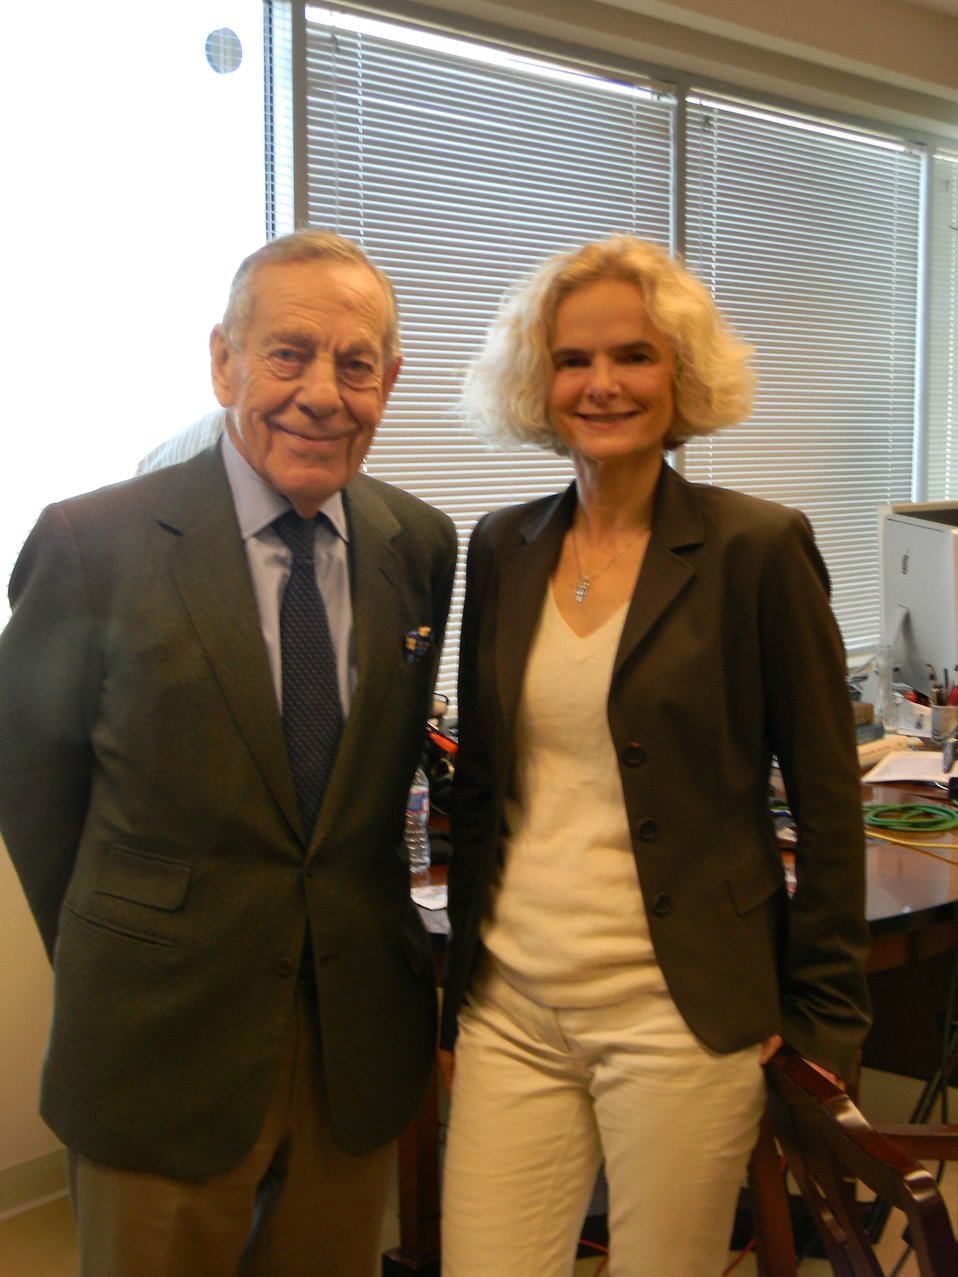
Dr. Nora Volkow Profiled on 60 Minutes

60 Minutes Correspondent Morley Safer interviewed Dr. Nora Volkow in her office for a profile piece.